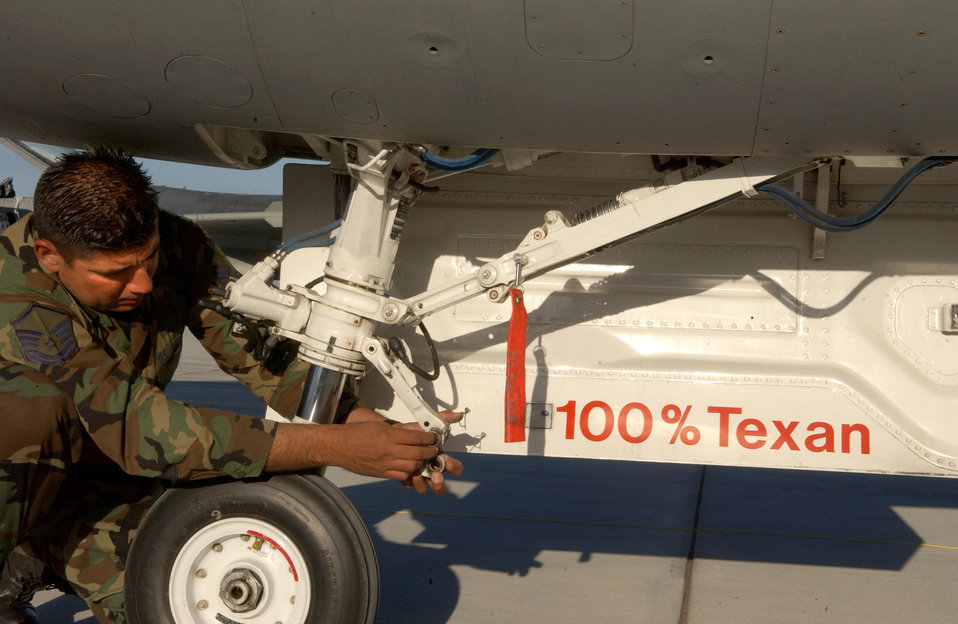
Falcons in Poland

LASK AIR BASE, Poland -- Master Sgt. Carlos Rodriguez replaces the towing pin on an F-16 Fighting Falcon here Sept. 17. The Texas Air National Guard's 182nd Fighter Squadron is here to familiarize members of the Polish Air Force with the F-16 capabilities along with its day-to-day operations and maintenance. Sergeant Rodriguez is deployed from Lackland Air Force Base, Texas.